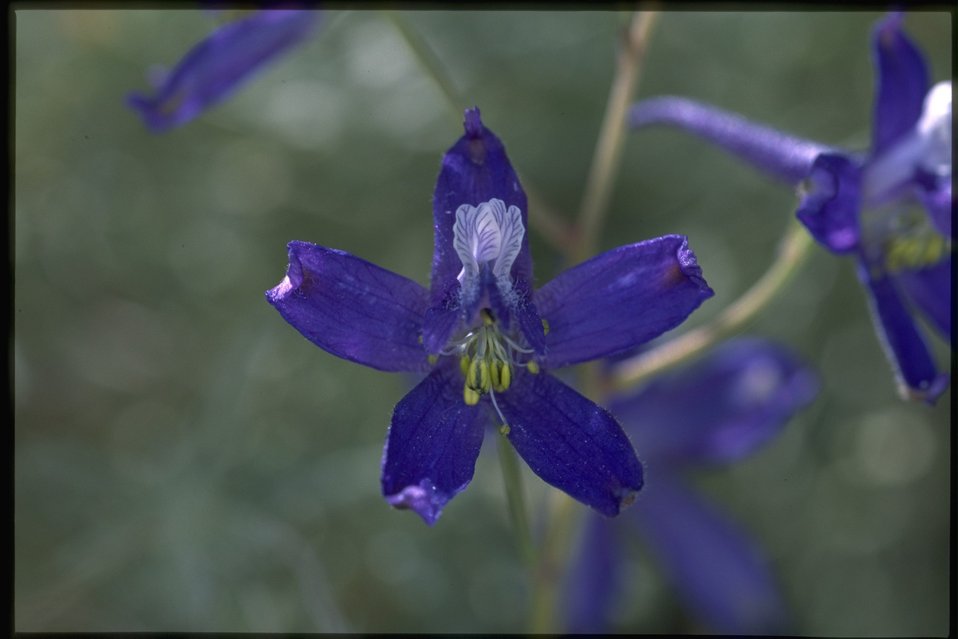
Closeup shot of Delphinium.